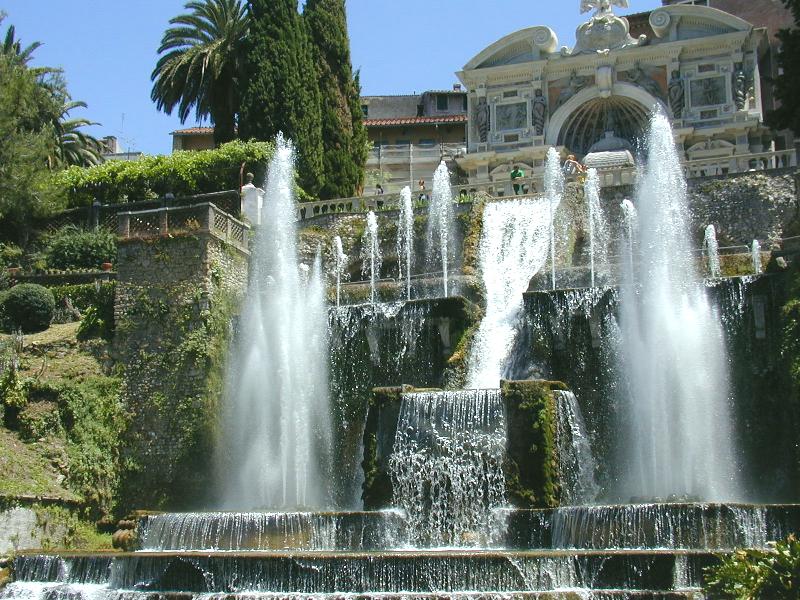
010609 28 villadesteacque